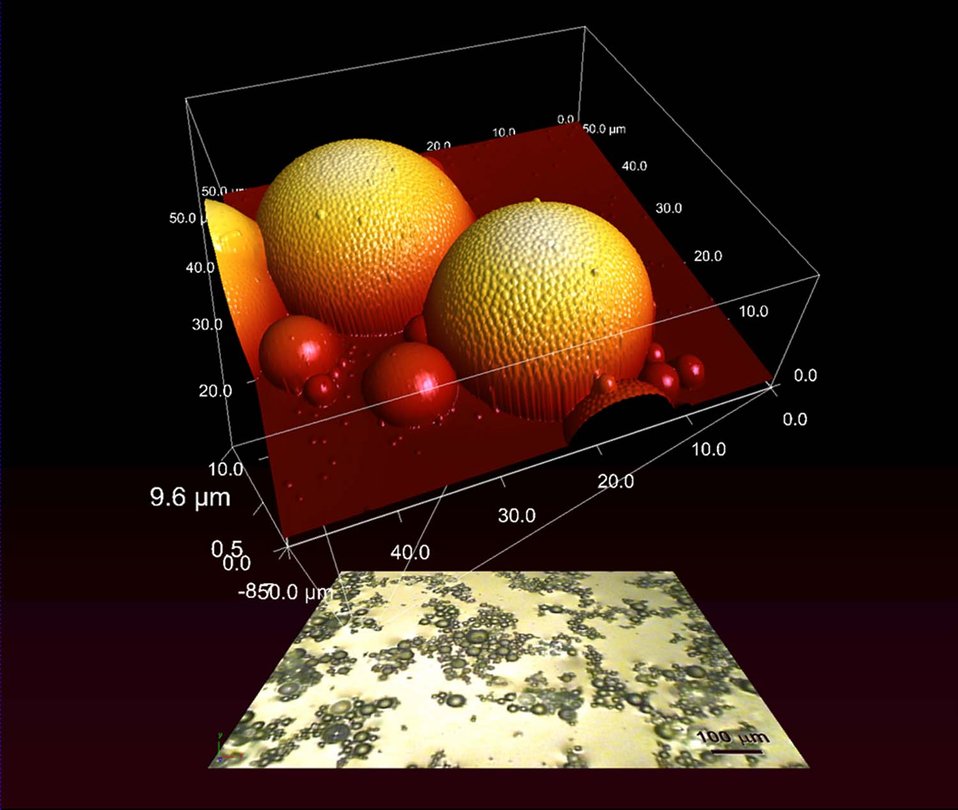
Fossilized Liquid Assembly. Nanomaterials Research Tool

Optical microscope image (lower plane) shows spheres at mutiple size scales self-arranging in complex 'super-assemblies' in NIST's hierarchical topology modeling system. Atomic-force microscopy (detail) shows the textured surface formed by the spheres.